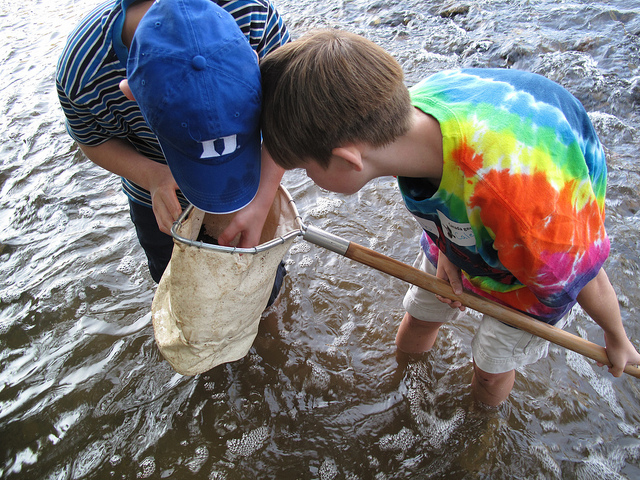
two boys and a net

Toe River Valley Festival 2010